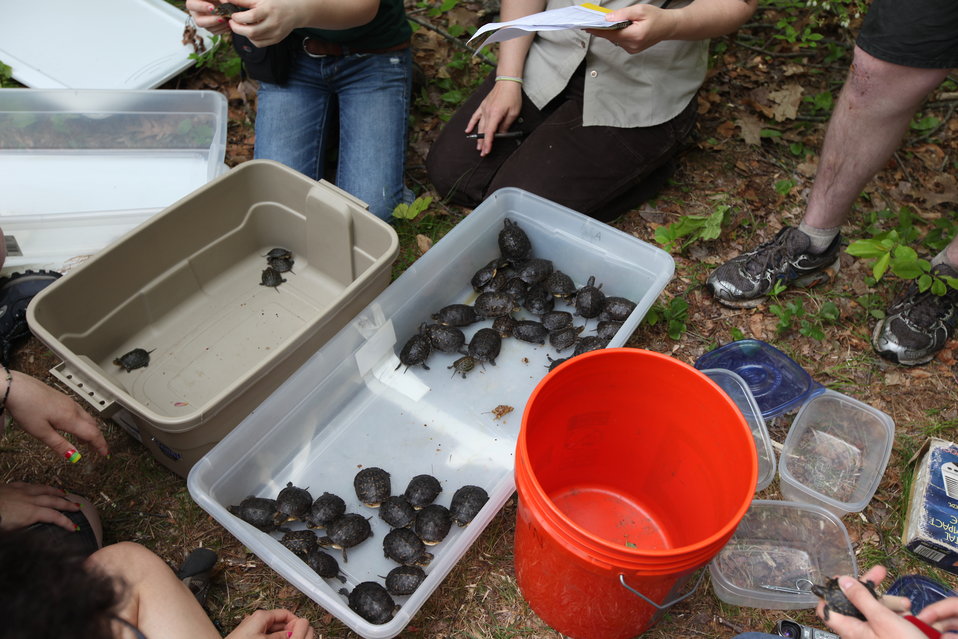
Turtles Ready to be Released

Blanding's turtle release, Assabet River, MA.